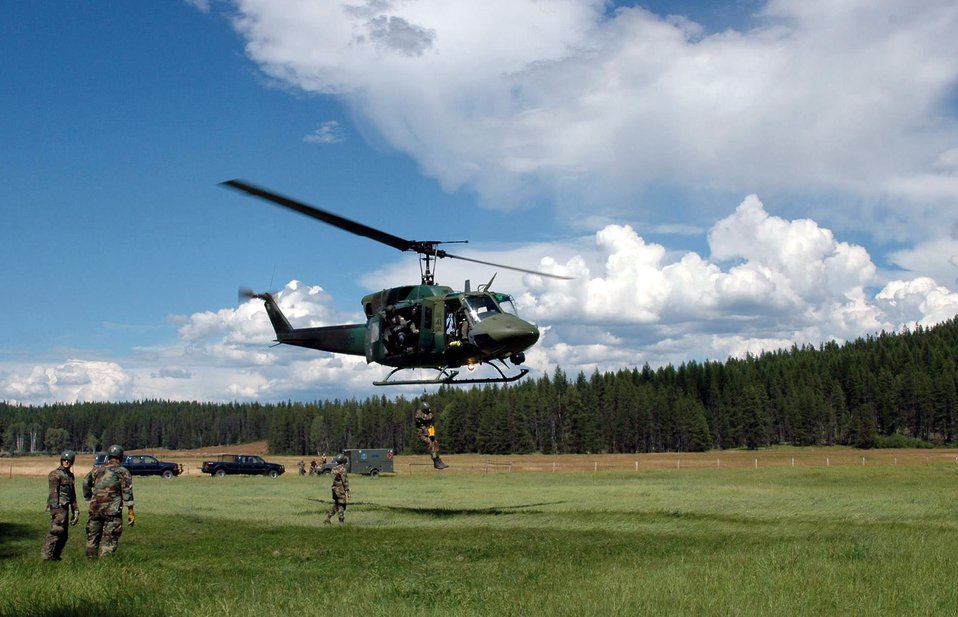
Rescue flight crews provide help from above

A UH-1N Huey hoists a survival, evasion, resistance and escape specialist training student at a landing zone north of Fairchild Air Force Base, Wash. The 36th Rescue Flight supports the Air Force combat survival school, survival, evasion, resistance and escape specialist training, and supports the National Search and Rescue Plan for some off-base civilian emergencies.